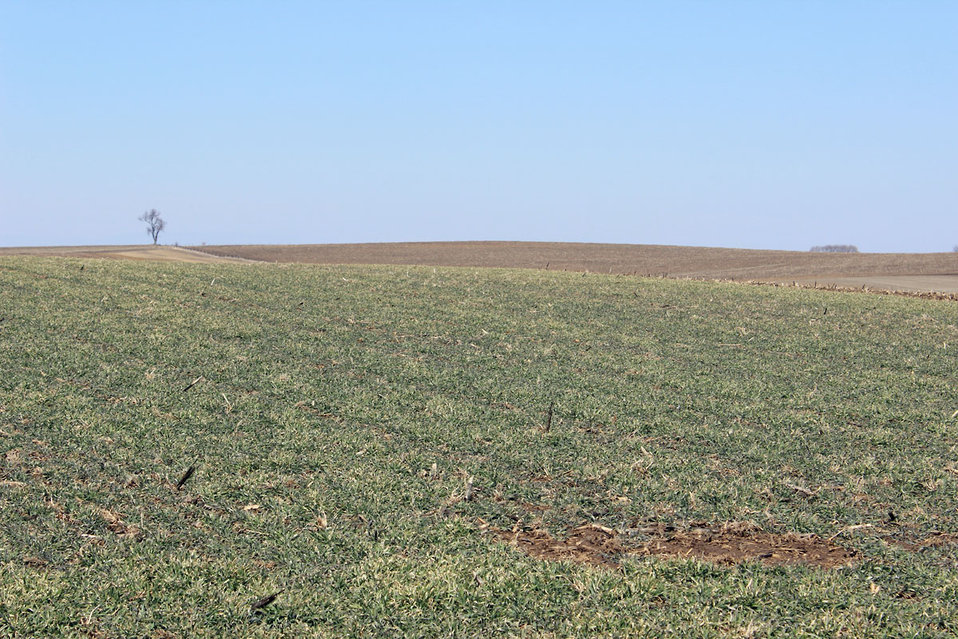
Ross Bremmer crop landscape

Cereal Rye has been tested on the Bremmer's farm in northwestern Illinois for two years. The U.S. Department of Agriculture’s (USDA) Natural Resources Conservation Service (NRCS) provided assistance to Ross and Chad Bremmer in the selection of the best cover crops for their land. Cereal Rye grass provides a supply healthy food for their cattle, less erosion and an increase in the soil’s water-storage capacity.